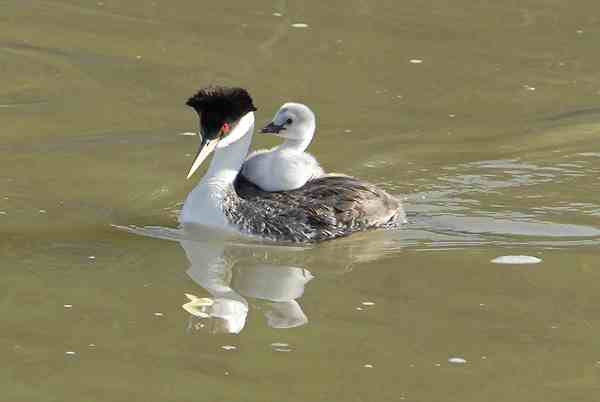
grebe with chick

Bear River National Wildlife Refuge, UT